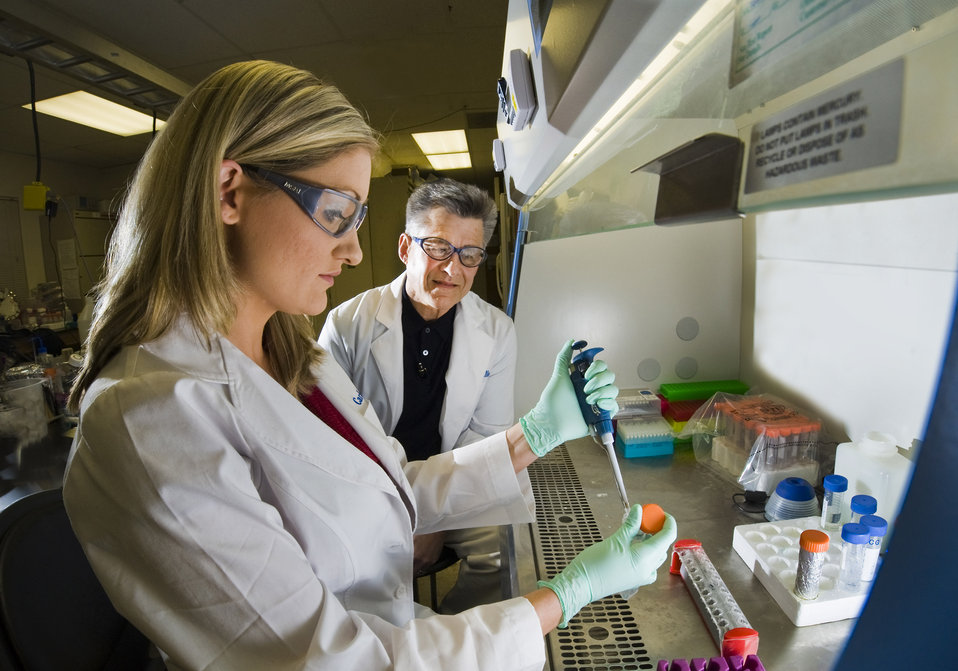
Sandia post-doctoral fellow introduces a buffer into a protocell solution to dilute it as Sandia researcher and an University of New Mexico professor watches.
The melding nanotechnology and medical research, Sandia National Laboratories, the University of New Mexico and the UNM Cancer Researcher and Treatment Center have produced an effective strategy that uses nanoparticles to blast cancerous cells with a mixture of killer drugs.